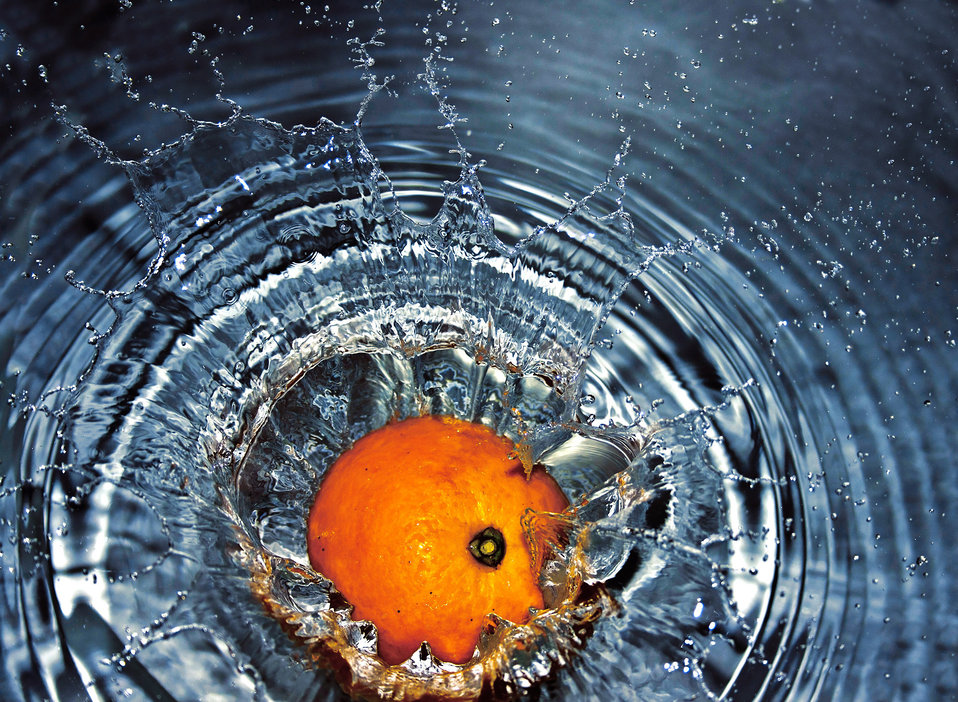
Fresh

Orange falling into water bowl.